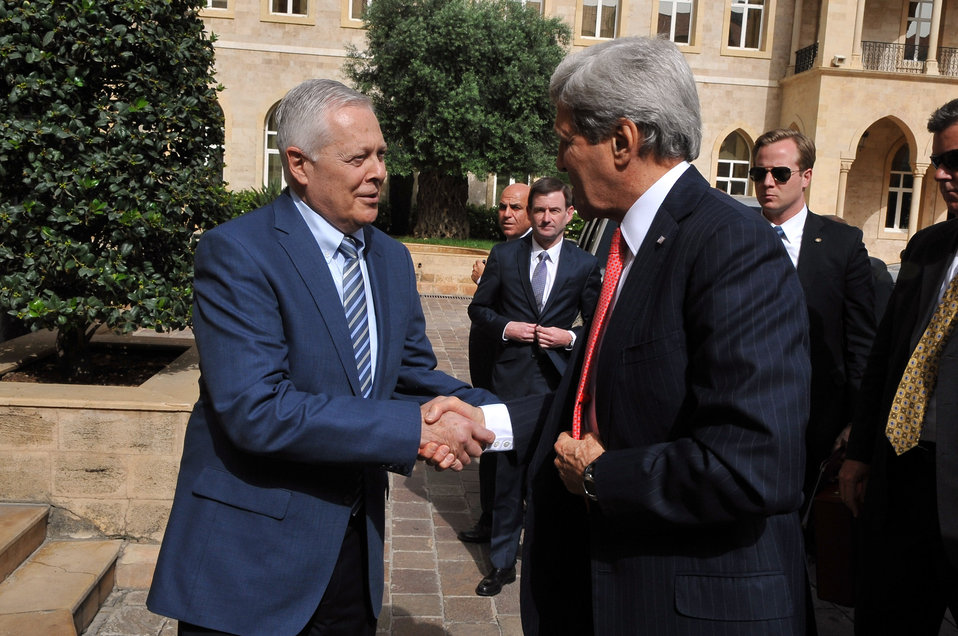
Secretary Kerry Is Greeted by Ambassador Demesquieh at the Prime Minister's Office

U.S. Secretary of State John Kerry is greeted by Ambassador Demesquieh at the Prime Minister's Office in Beirut, Lebanon, on June 4, 2014.